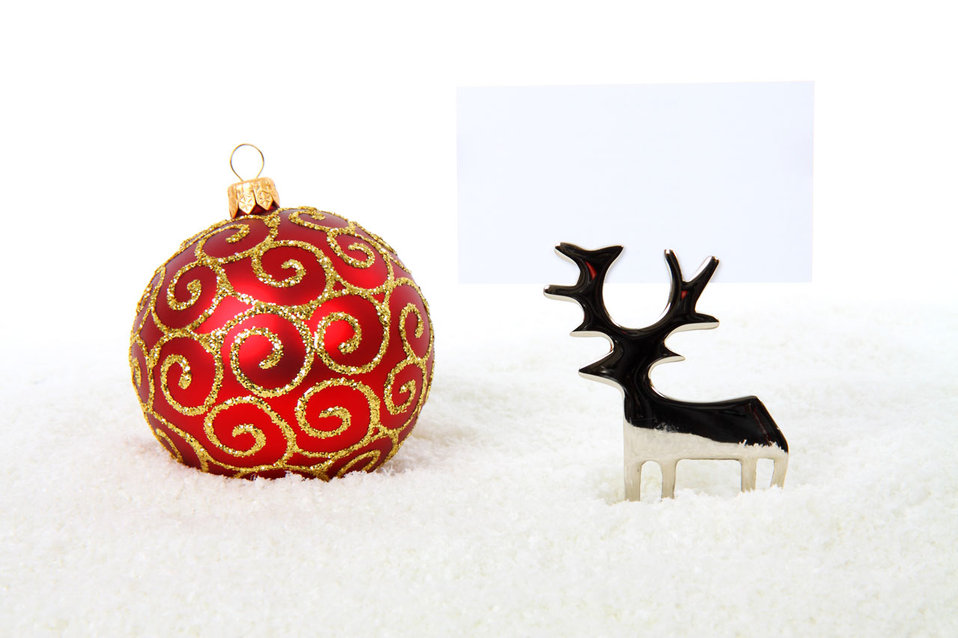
Reindeer with bauble

Reindeer holding business card with red bauble in snow.